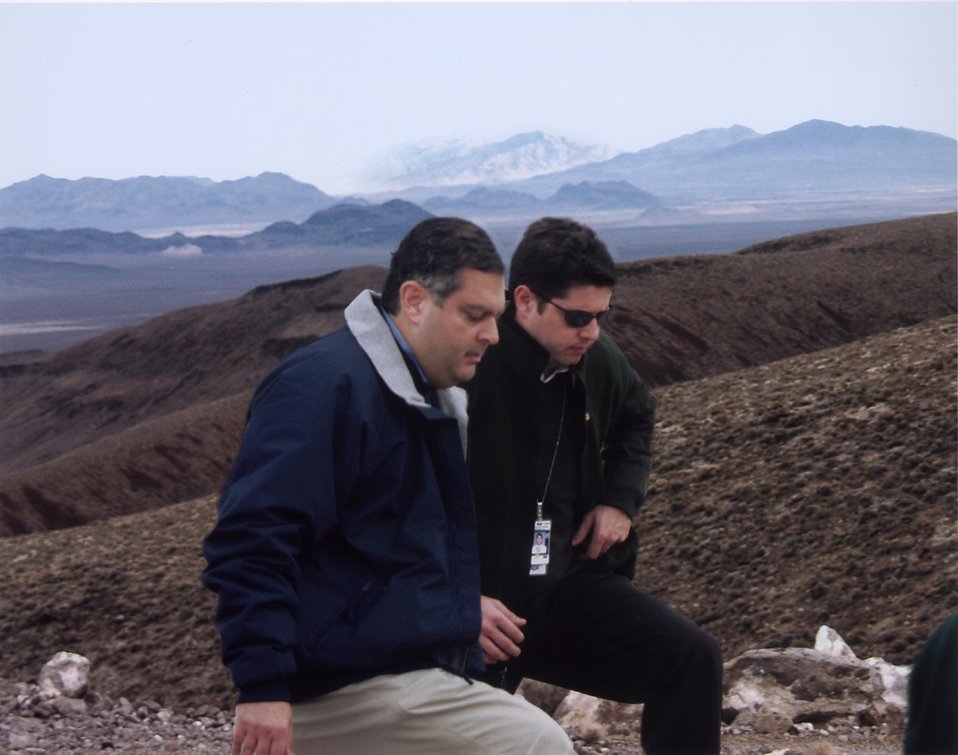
SECRETARY ABRAHAM AT THE CREST OF YUCCA MOUNTAIN.

YUCCA MOUNTAIN, ON THE SOUTHWEST BOUNDARY OF THE NEVADA TEST SITE, IS BEING EVALUATED FOR SUITABILITY AS THE NATION'S FIRST REPOSITORY FOR HIGH LEVEL NUCLEAR WASTE. STUDIES INCLUDE SURFACE BASED TESTING OF ROCK, SOIL SAMPLES AND WATER MOVEMENT, SUBSURFACE ROCK TESTING AT DEEP LEVELS AND LABORATORY ANALYSIS OF SAMPLES. CURRENTLY NUCLEAR WASTE IS STORED IN TEMPORARY SURFACE STORAGE FACILITIES IN 39 STATES.